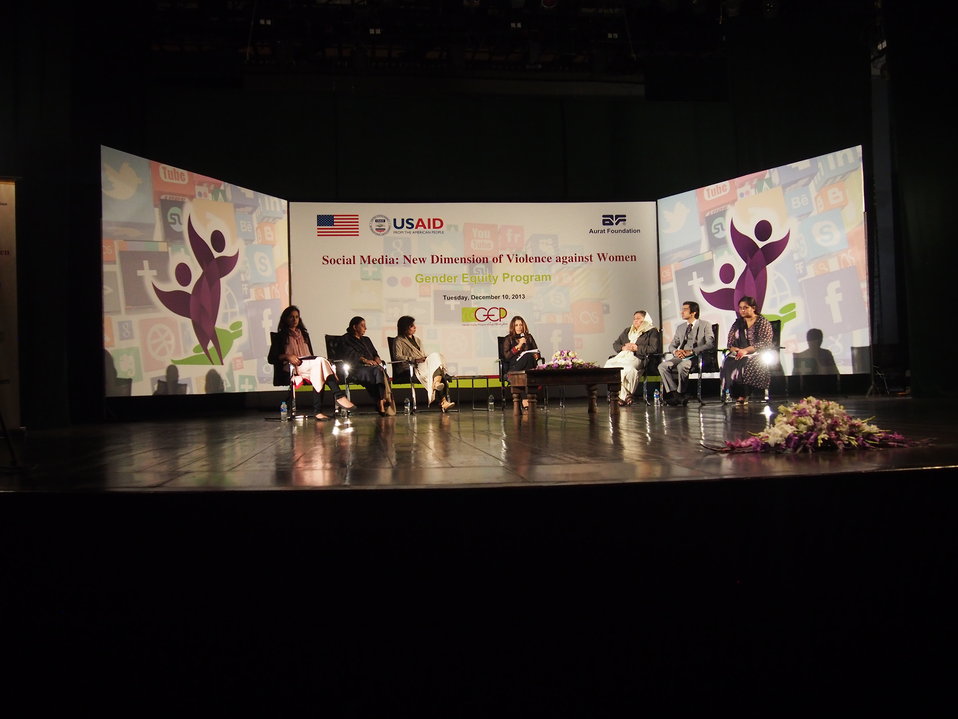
Social Media Event

Participants at a United States funded panel discussion on cyber-bullying today condemned the rising trend of cyber-crime against women and said that large number of Pakistani girls and women are victims of this kind of violence, which mainly includes cyber-stalking, blackmailing and pornography. They said that due to existing social norms, women are more vulnerable to the negative aspects of information technology.

The panel discussion, titled “Social Media: New Dimension of Violence against Women,” was part of the 16 Days of Activism campaign about violence against women. It took place at the Pakistan National Council of Arts and was sponsored by Aurat Foundation’s Gender Equity Program (GEP), which is funded by the United States government through U.S. Agency for International Development (USAID).